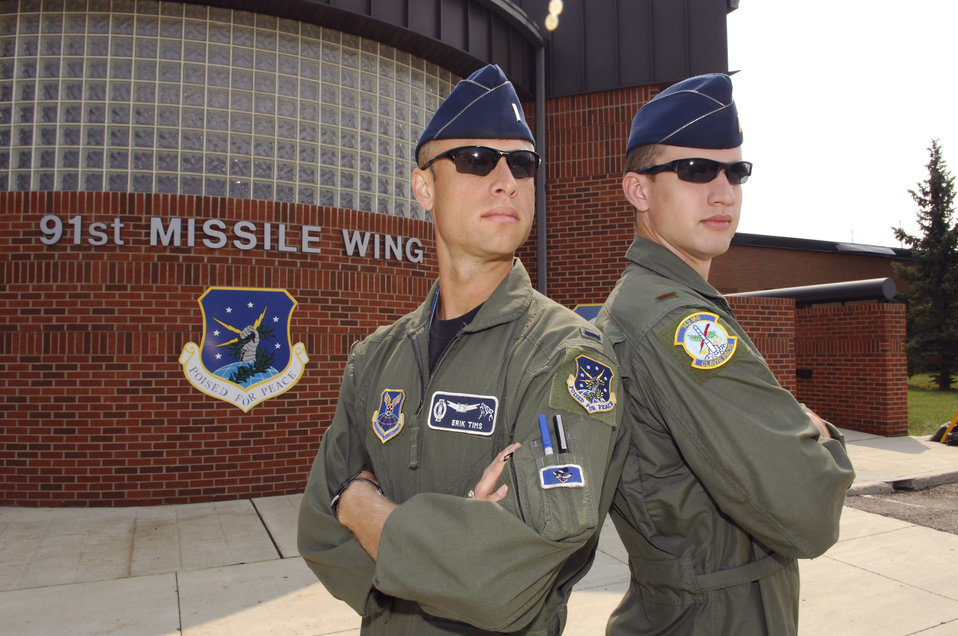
Tims

1st Lt. Erik Tims and 2nd Lt. Patrick Tims pose for a photo outside of the 91st Missile Wing headquarters building Aug. 18. The two lieutenants, who happen to be brothers, took part in a once-in-a-lifetime event at Minot AFB here by pulling their first and last alert together Aug. 19, 2010 at Minot AFB. N.D. Erik and Patrick are both with the 742nd Missile Squadron here.